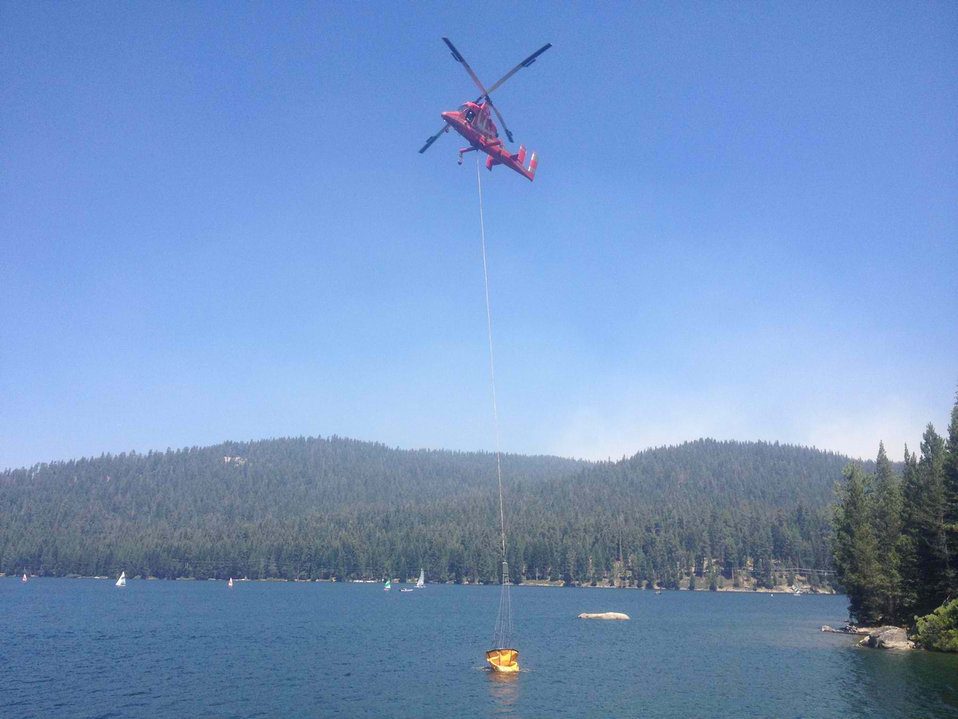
A helicopter fills it water bucket from Huntington Lake to aid in the suppression of the Aspen Fire. The Aspen Fire in the Sierra National Forest near Big Creek, CA began on Jul. 22, 2013 by lightning and has consumed approximately 20,252 acres and is approximately 70% contained.